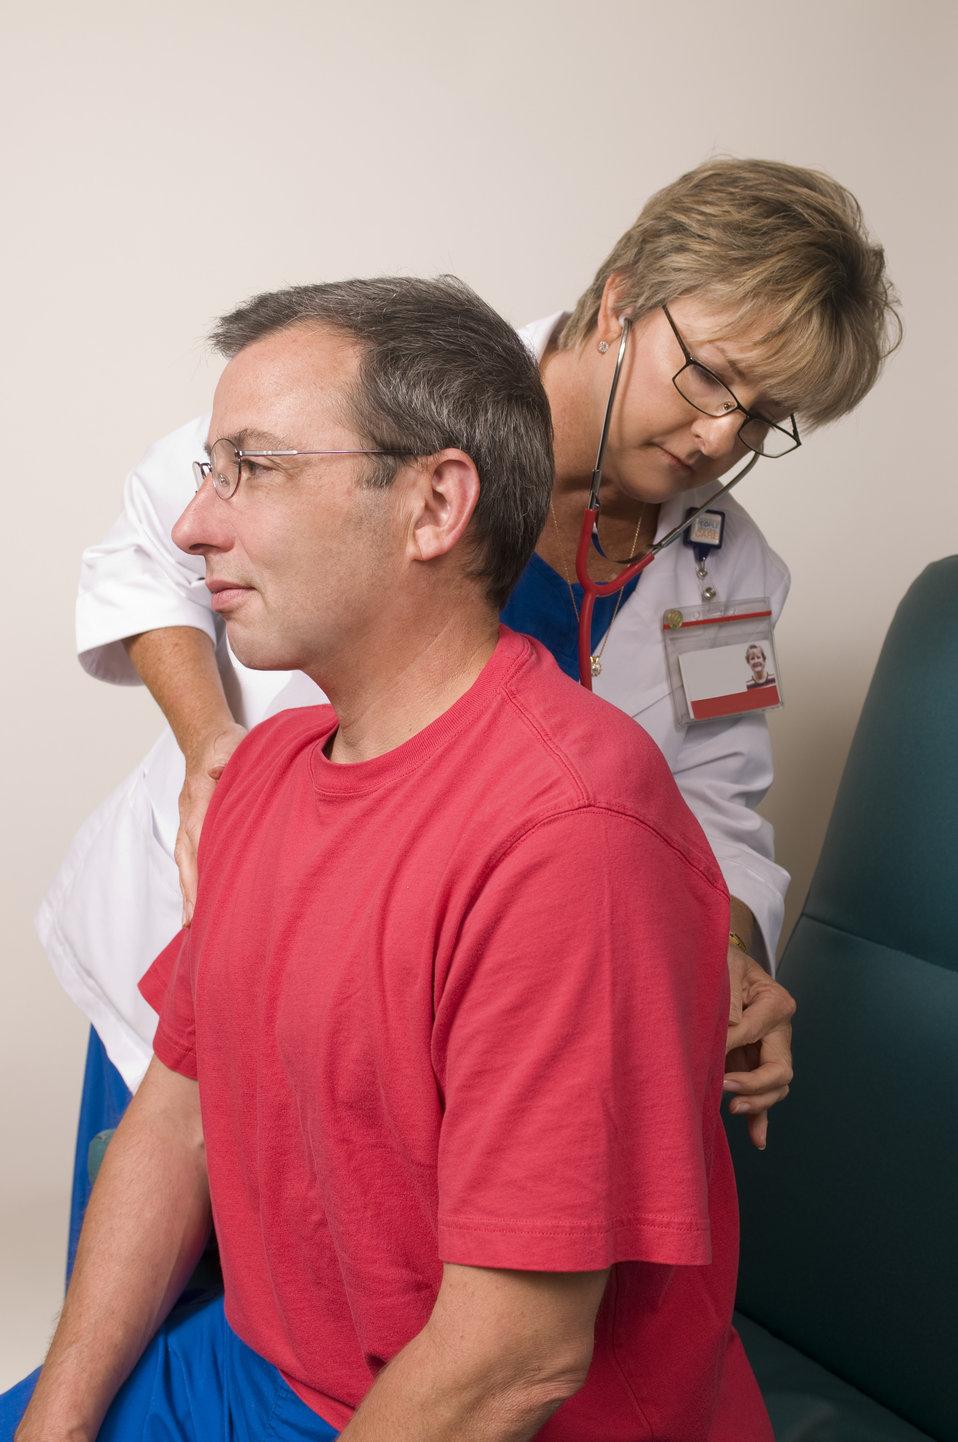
This image depicts a female clinician using a stethoscope she'd placed upon a male patient's back, in order to perform a thoracic auscultation.